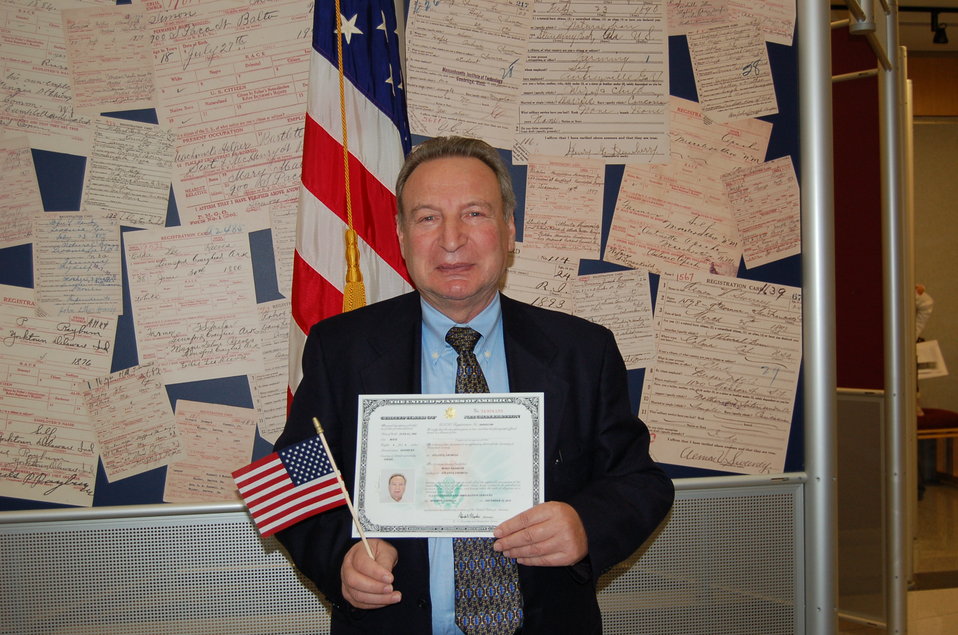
New Citizens